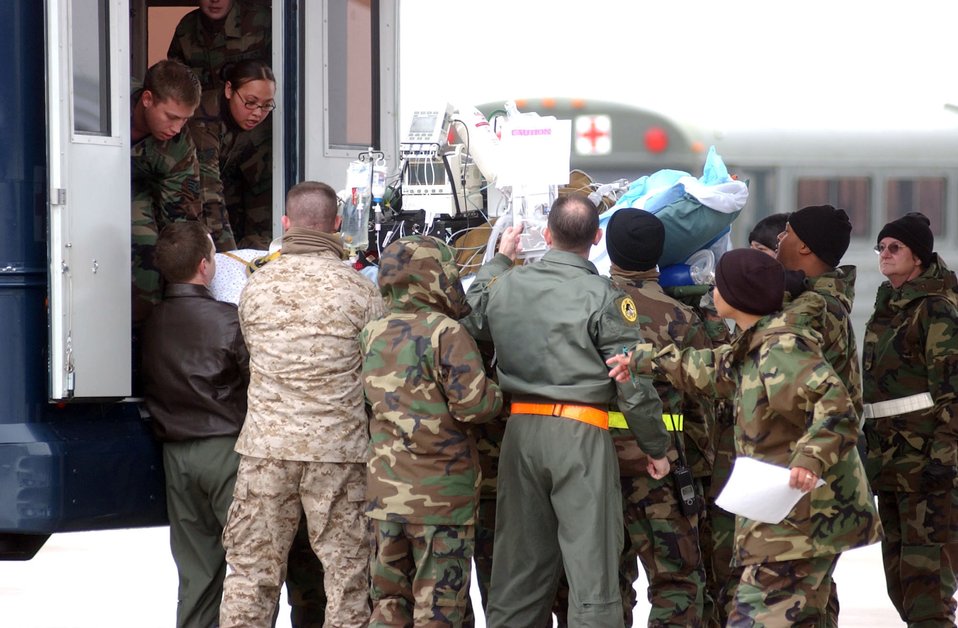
Air Force evacuates ABC News team to U.S.

RAMSTEIN AIR BASE, Germany (AFPN) -- Members of the 435th Contingency Aeromedical Staging Facility transfer ABC anchorman Bob Woodruff to a C-17 Globemaster III here today. Mr. Woodruff and his cameraman, Doug Vogt, were injured in Iraq and had been treated for their injuries at Landstuhl Regional Medical Center in Germany. The C-17 is from the Mississippi Air National Guard.